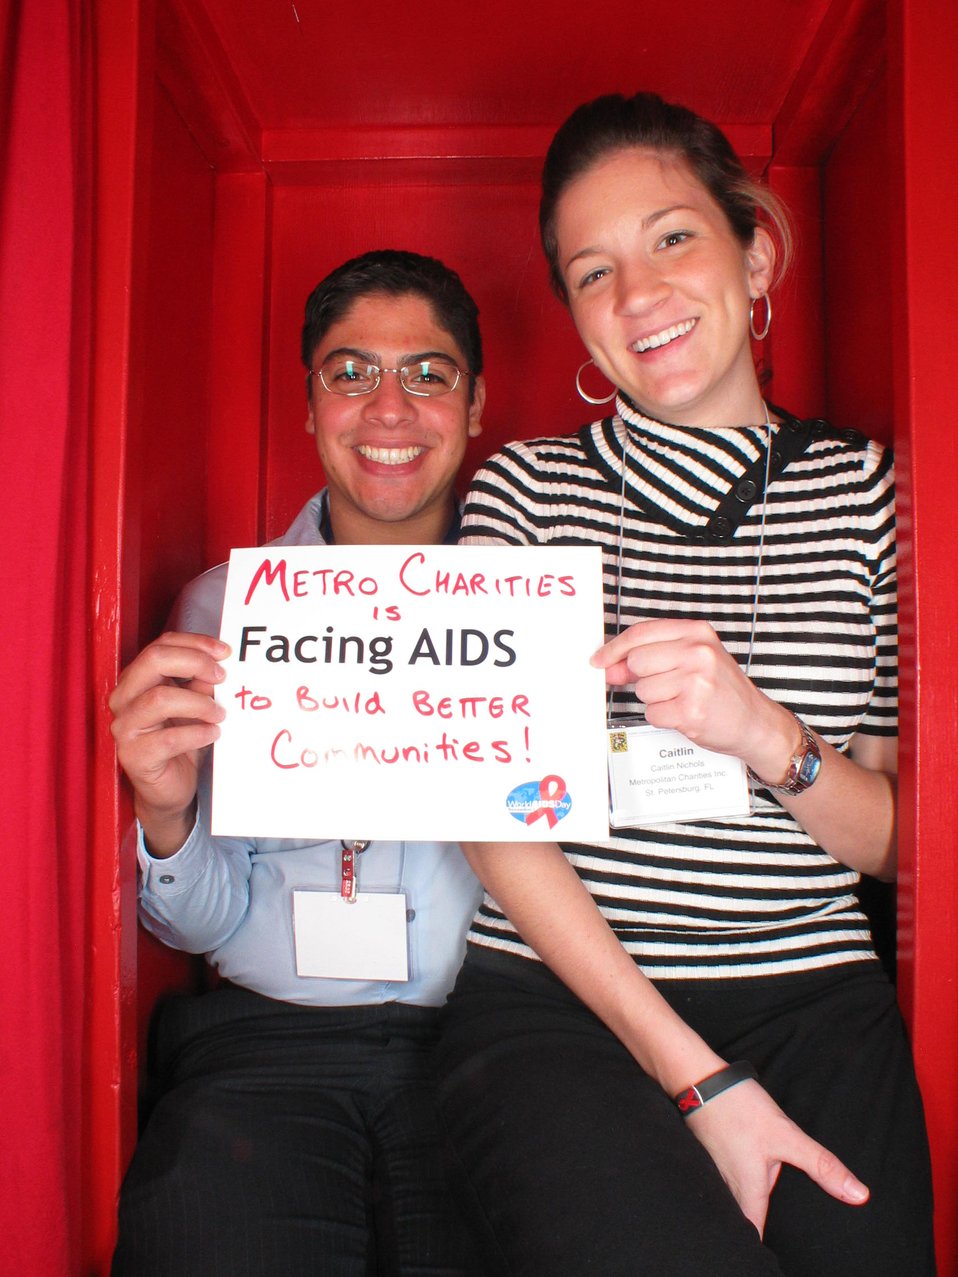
Facing AIDS to build better communities!